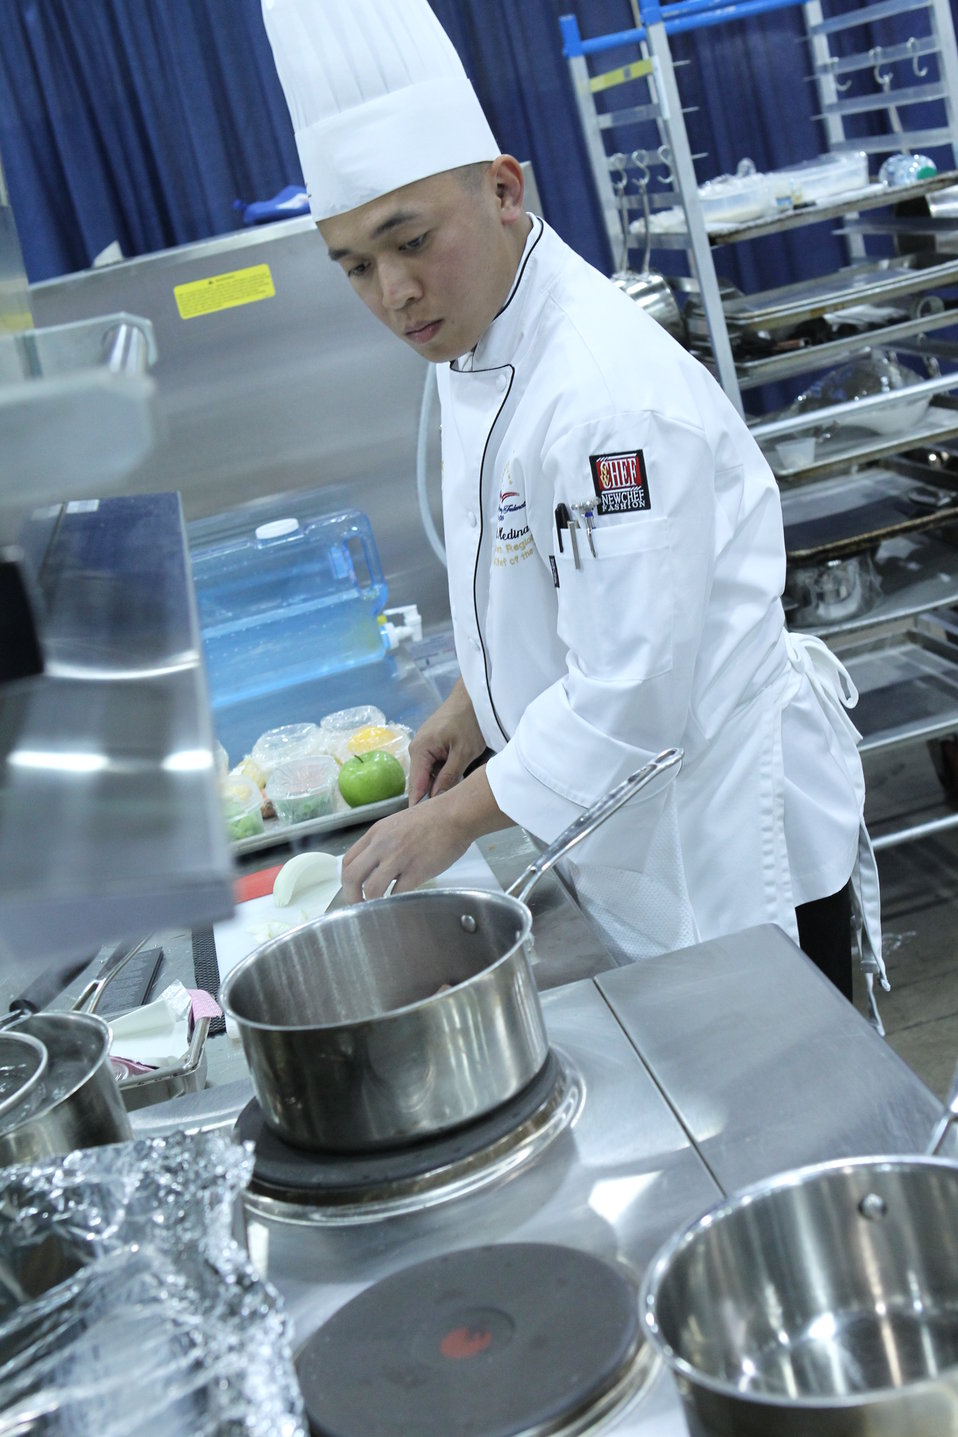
The fire inside: an Air Force chef's journey to culinary excellence

Staff Sgt. Ghil Medina, a 633rd Force Support Squadron services journeyman, tries to beat the clock while preparing a meal for the American Culinary Federation's National Student Chef of the Year Award competition at the 2011 ACF National Convention in Dallas on July 24, 2011. While he ultimately did not win this award, Medina has won numerous awards in the military food services community, including being the first Airman to win the 2011 Armed Forces Junior Chef of the Year Award.